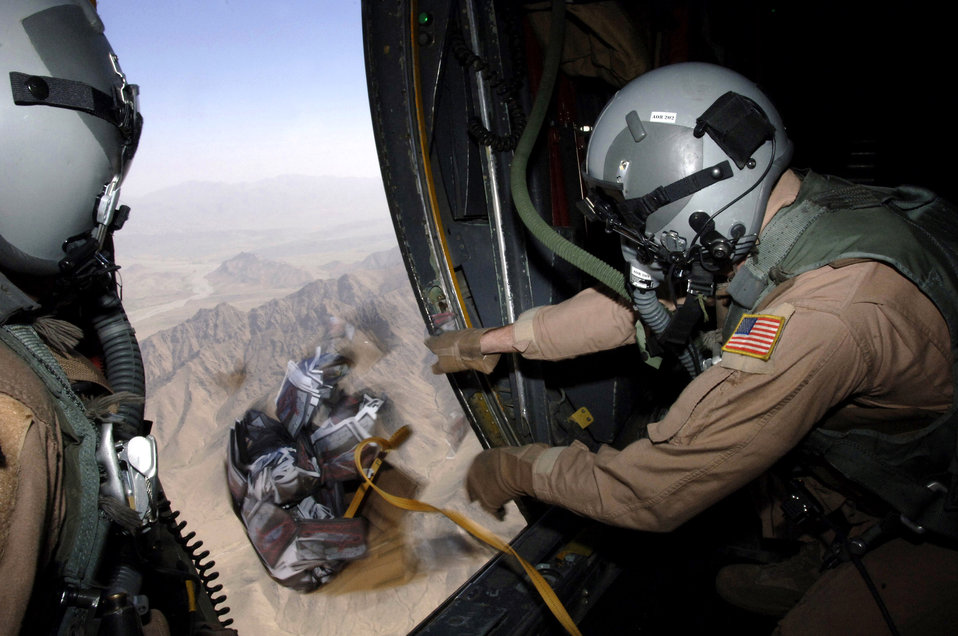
Spreading the word

Airman 1st Class Josh Huffman drops a bundle of warning leaflets over the southeastern mountains of Afghanistan from the back of a C-130 Hercules. The leaflets were used to communicate with Taliban extremists, warning them not to interfere with coalition activities.